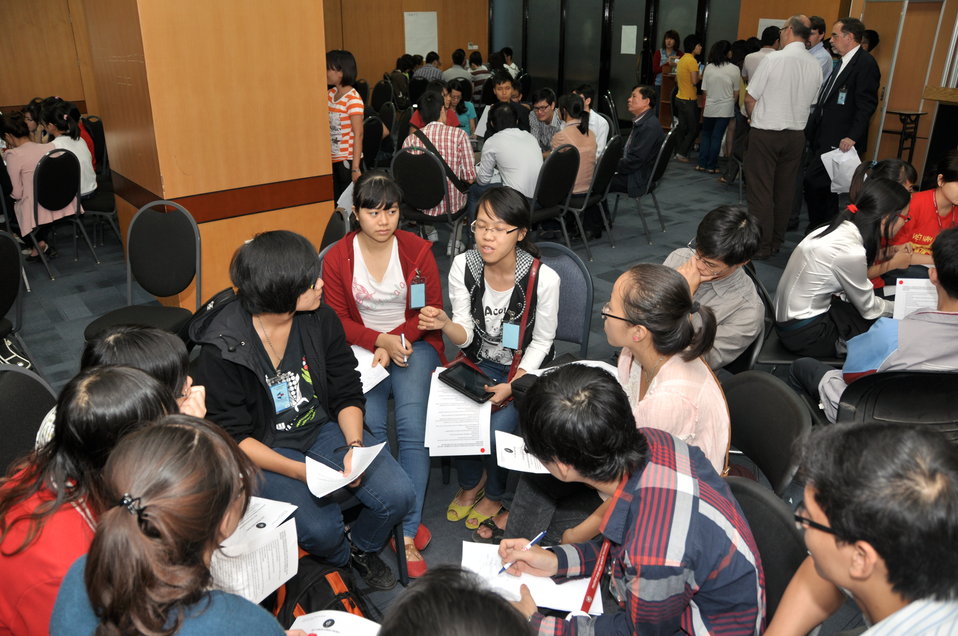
Vietnamese university students join the Business Plan Mashup exercise

Photo: @USAIDVietnam, November 16, 2012